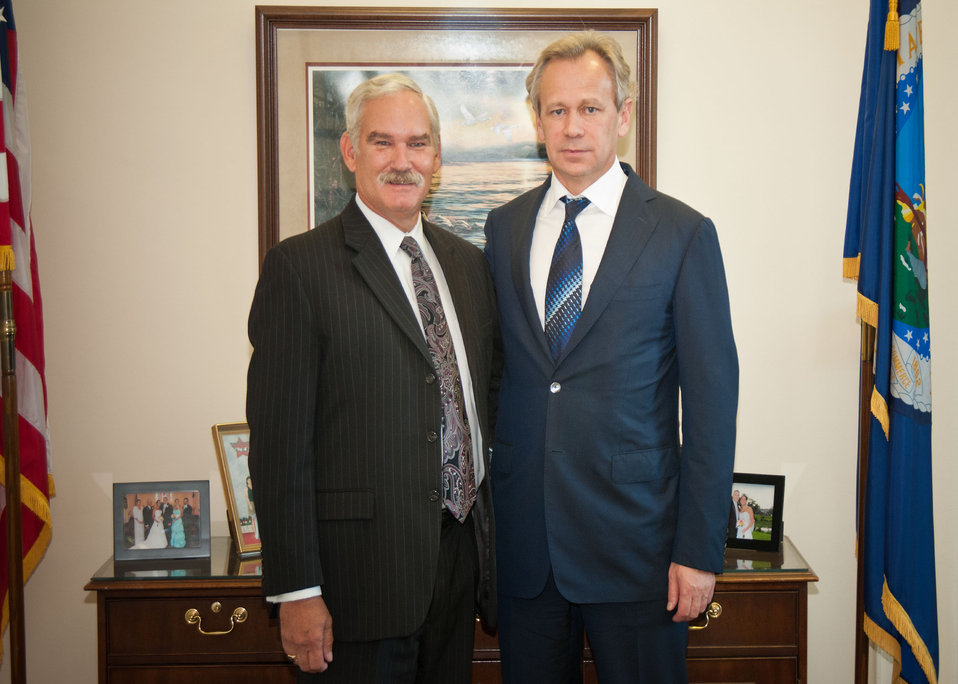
Agriculture Under Secretary Farm and Foreign Agricultural Services (FFAS) Michael Scuse meets with Ukranian Minister Mykola Prysiazhniuk at the U.S. Department of Agriculture in Washington, D.C. on Thursday, Sept. 20, 2012.